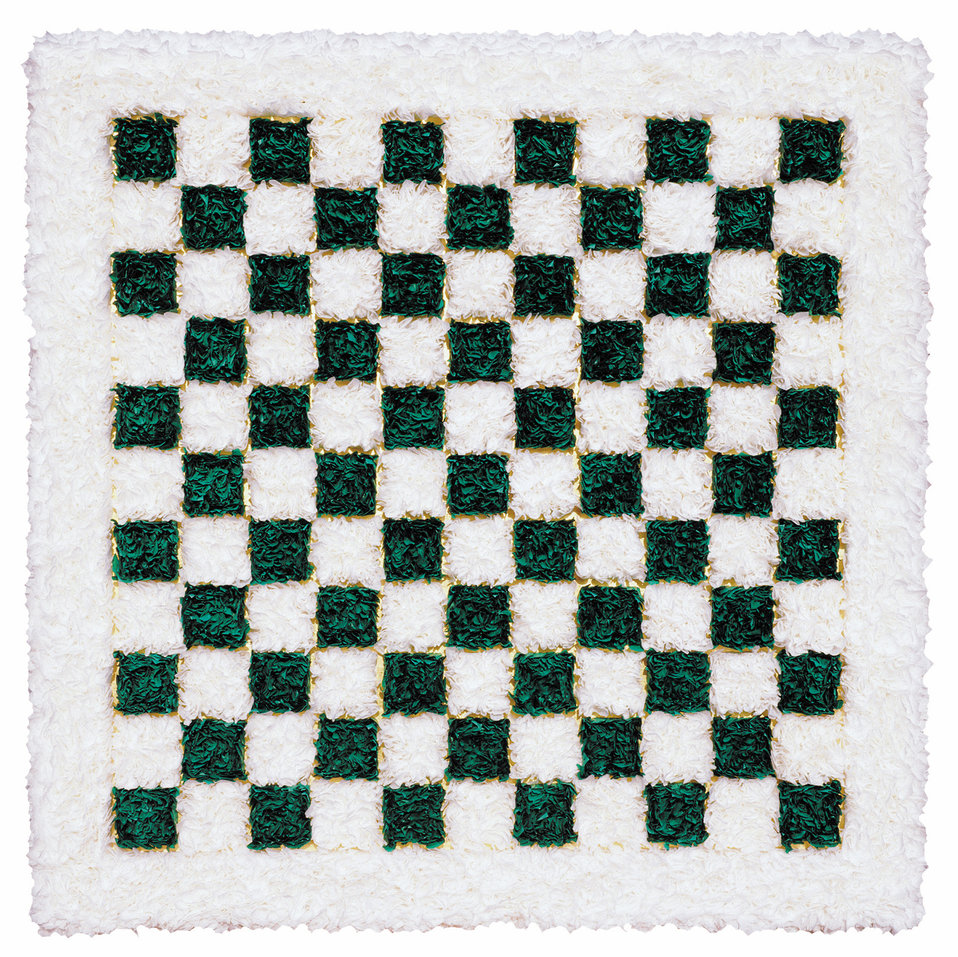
Deutsch: Multiple in Weiß, Grün und Gold